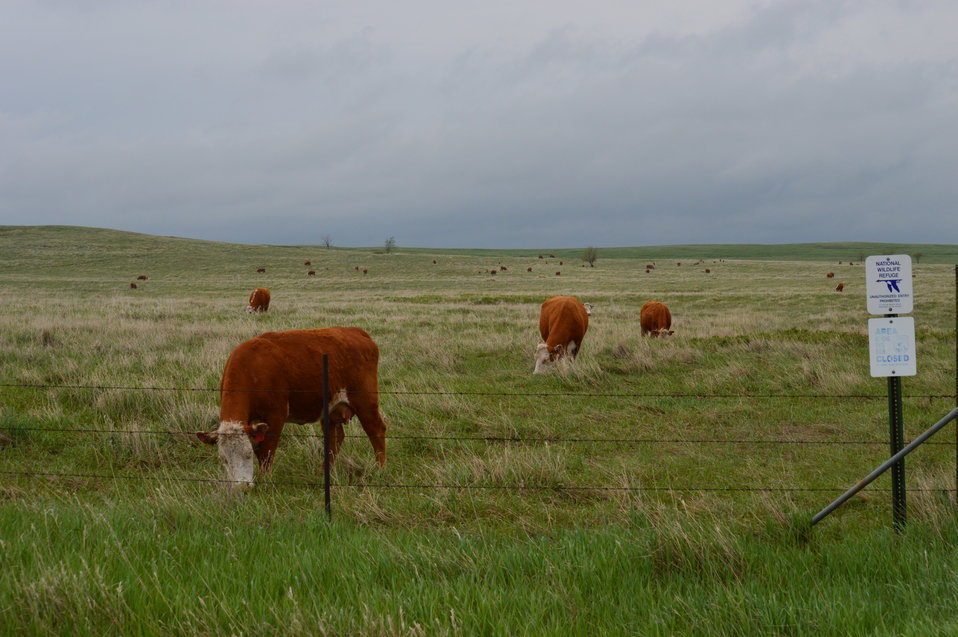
Cattle grazing

Scenery and wildlife at Lake Ilo National Wildlife Refuge in North Dakota